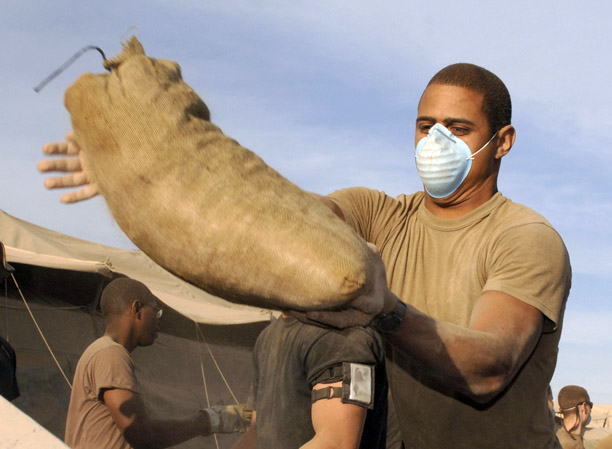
Operation Iraqi Freedom

BALAD AIR BASE, Iraq -- Senior Airman Brendan Campbell lends a hand in the removal of sandbags around the Air Force theater hospital here. Airman Campbell is with the 332nd Civil Engineering Squadron.